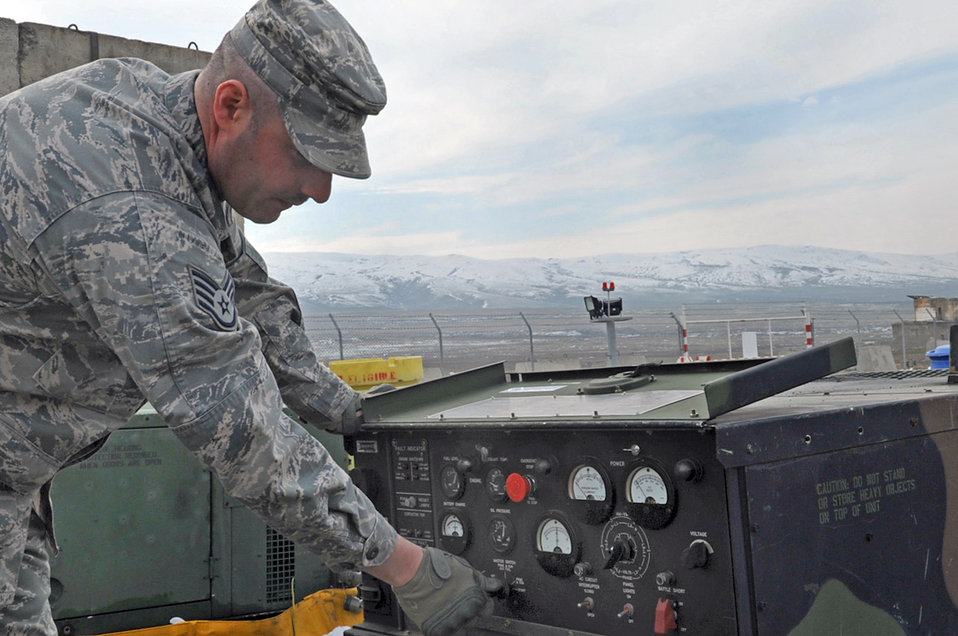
Combat Comm provides vital 'link' to Marines in Georgia

Staff Sgt. James Morgan starts up a mobile electric power generator used to power equipment Feb. 9, 2010, at the Krtsanisi National Training Center, Republic of Georgia. Sergeant Morgan is an electrical power production technician assigned to the 1st Combat Communications Squadron.